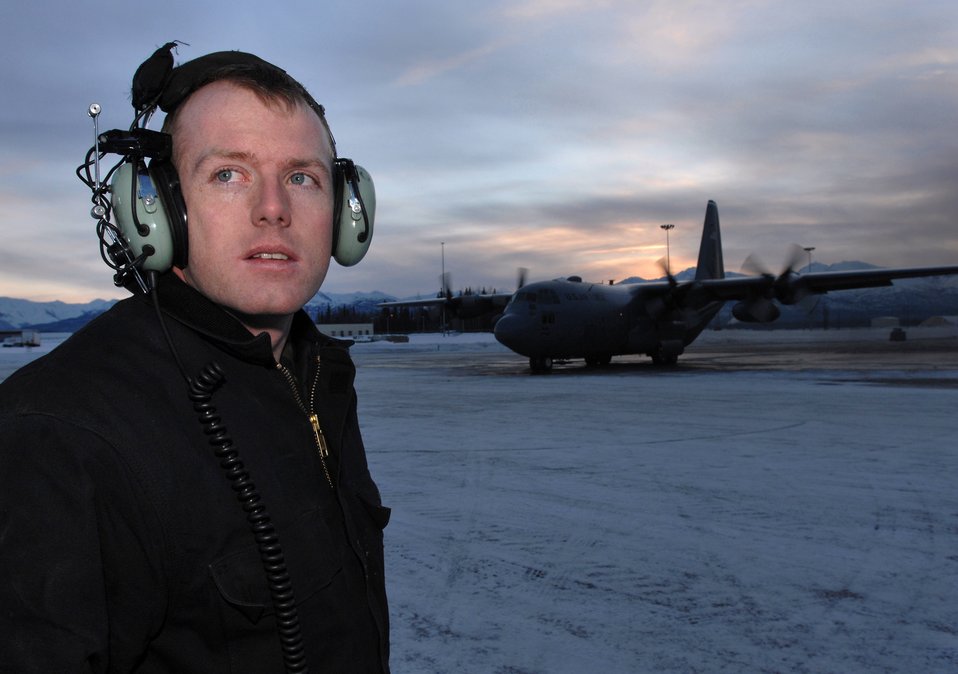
Baby, it's cold outside

Senior Airman Steven Ferrin checks for hazards before marshalling out a C-130 Hercules for takeoff Feb. 15 from Elmendorf Air Force Base, Alaska. Airman Ferrin is a crew chief for the 703rd Aircraft Maintenance Squadron and the C-130 Hercules belongs to the 517th Airlift Squadron.